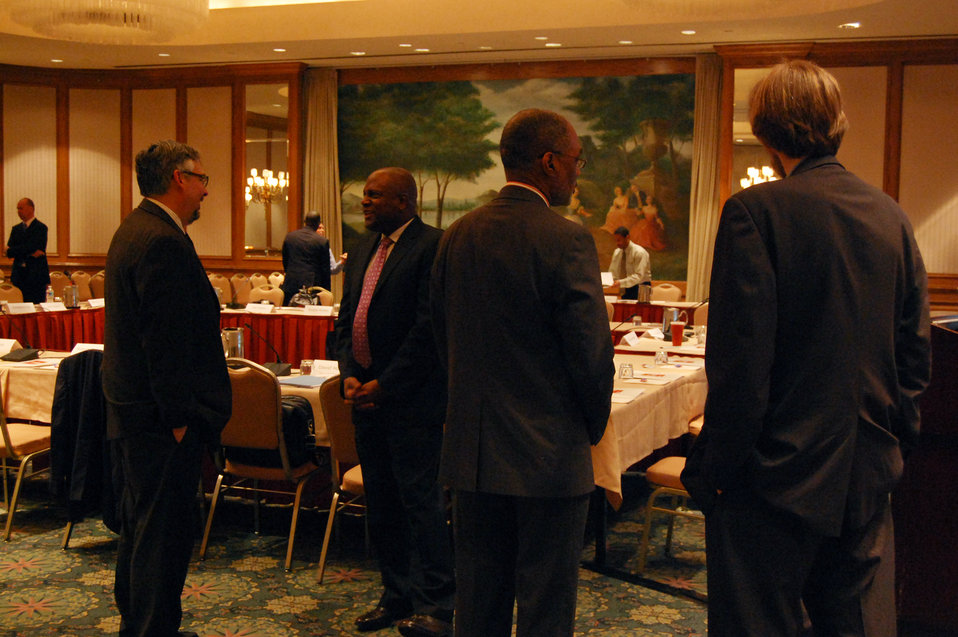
PACHA conf009